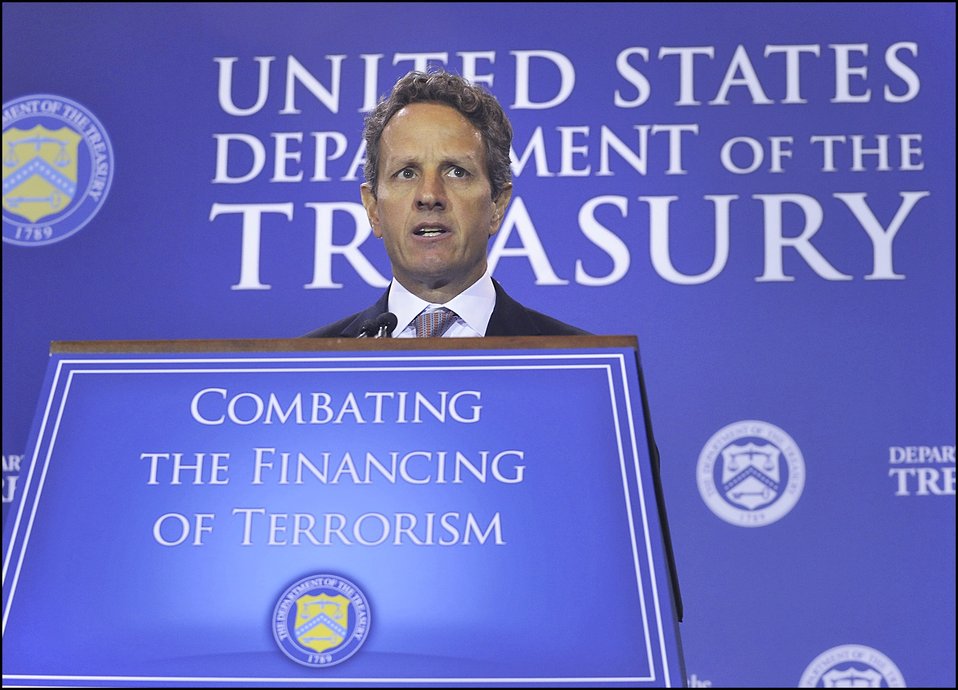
Ten Years Later: Progress and Challenges in Combating Terrorist Financing Since 9/11, 09/08/11

Treasury Secretary Tim Geithner opened the symposium, where he said, “Thanks to this strategy, donors, financial institutions, and facilitators across the world are no longer free to fund and facilitate terrorism with impunity. The pool of money for terrorism is shrinking, and it is has grown harder and harder to hide and move funds.'